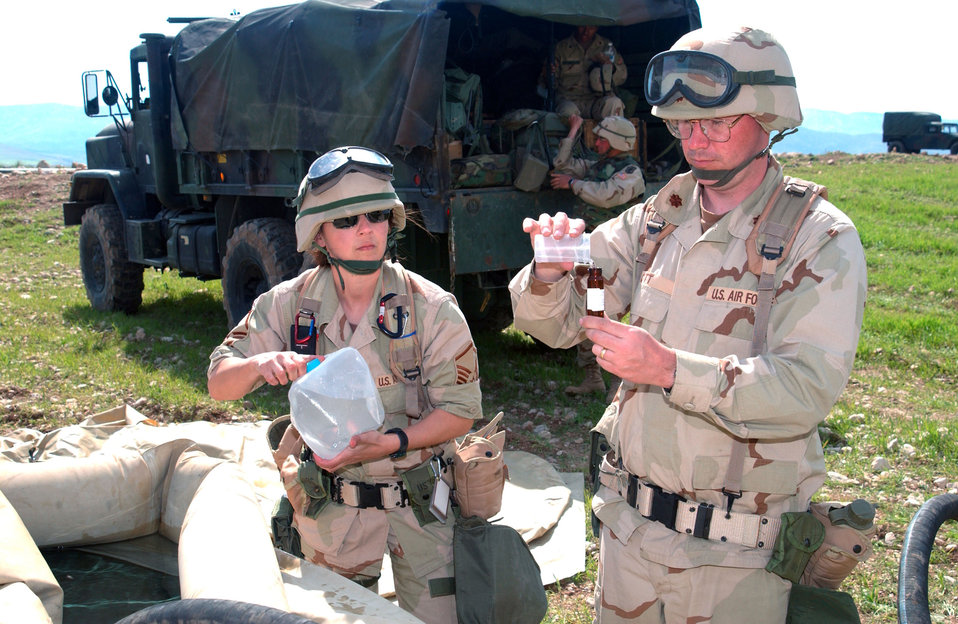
Pure water?

OPERATION IRAQI FREEDOM -- Master Sgt. Mindy Patrick and Maj. Darrin Ott, members of the 86th Expeditionary Contingency Response Group's Environmental Medicine Flight, take water samples for testing from a reverse osmosis treatment operation at a Northern Iraq airfield, April 1, 2003.